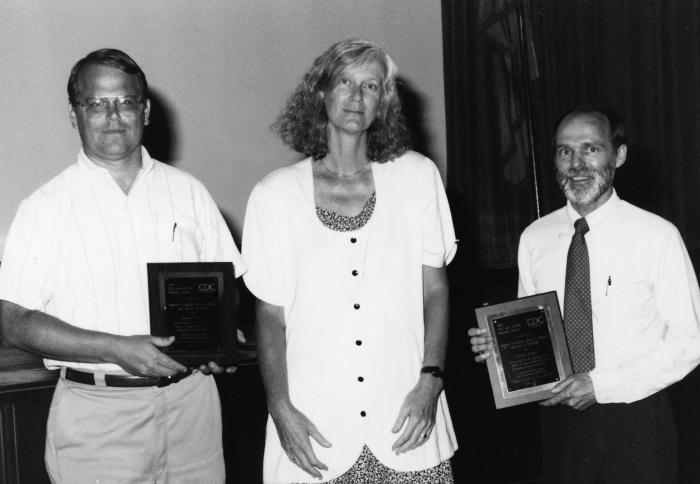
This photograph was taken during the presentation of the 1993 Centers for Disease Control's Statistical Achievement Awards ceremony.